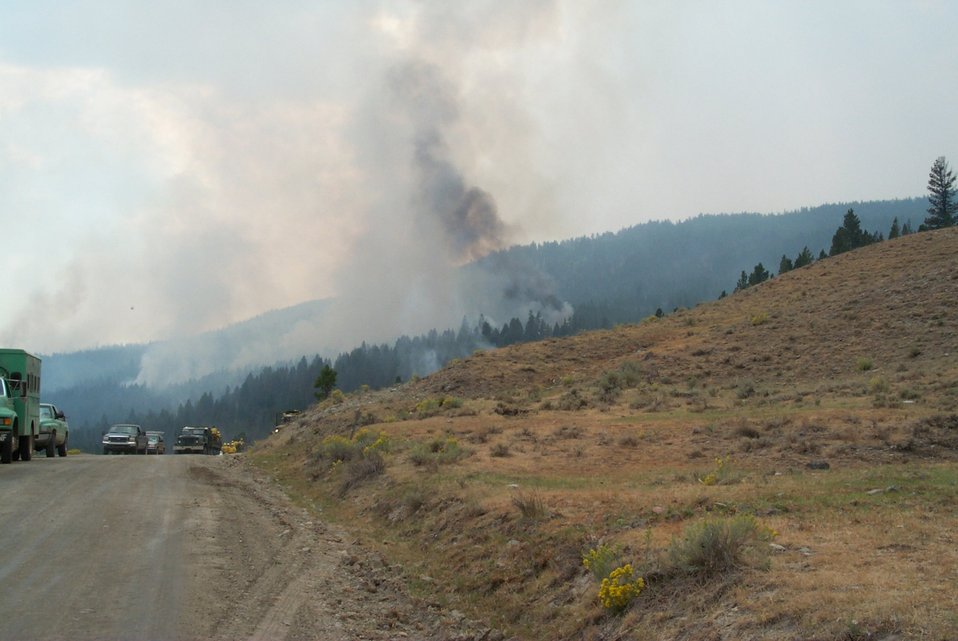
Fire Clearwater Fire Salmon Field Office USRD Upper Snake River District